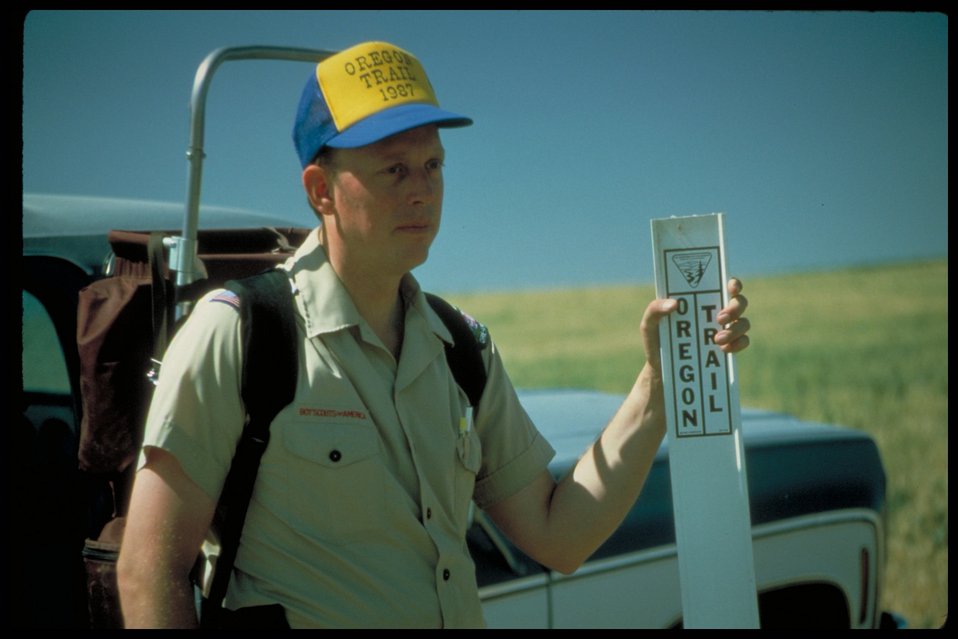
Boyscout Oregon Trail markings Oregon Trail Lower Snake River District